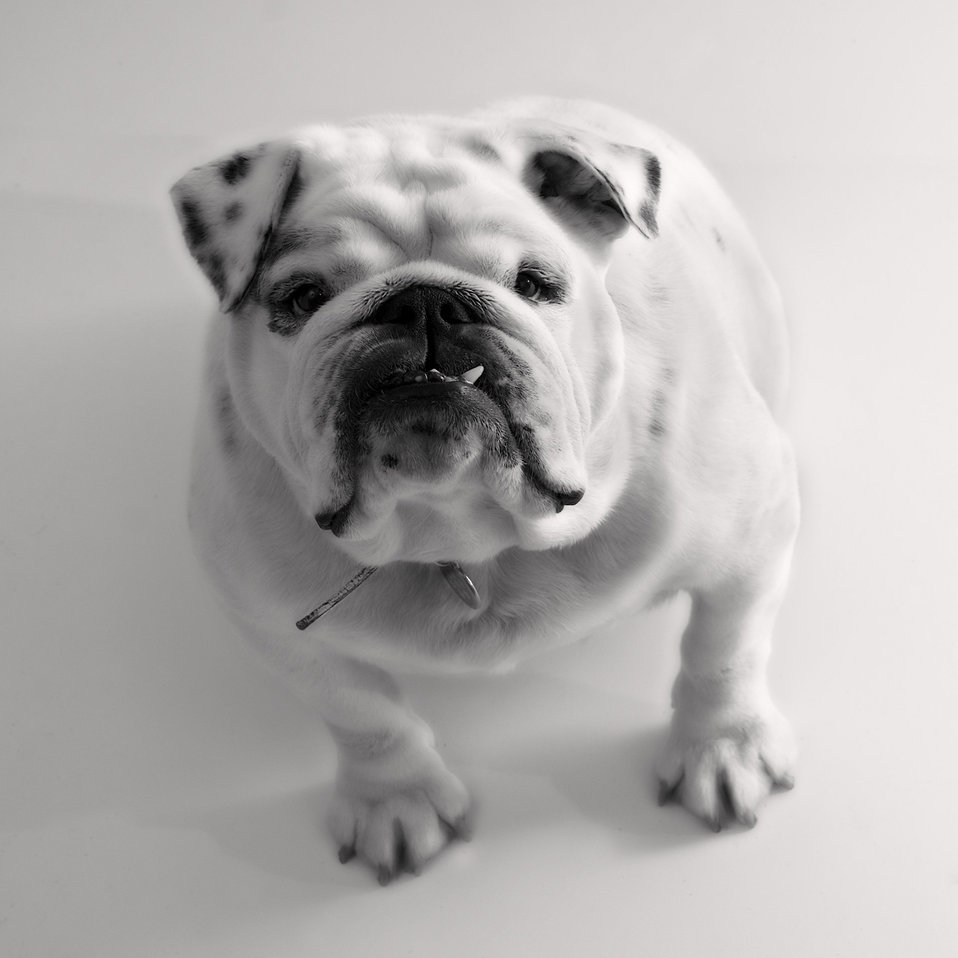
Mia

White bulldog.